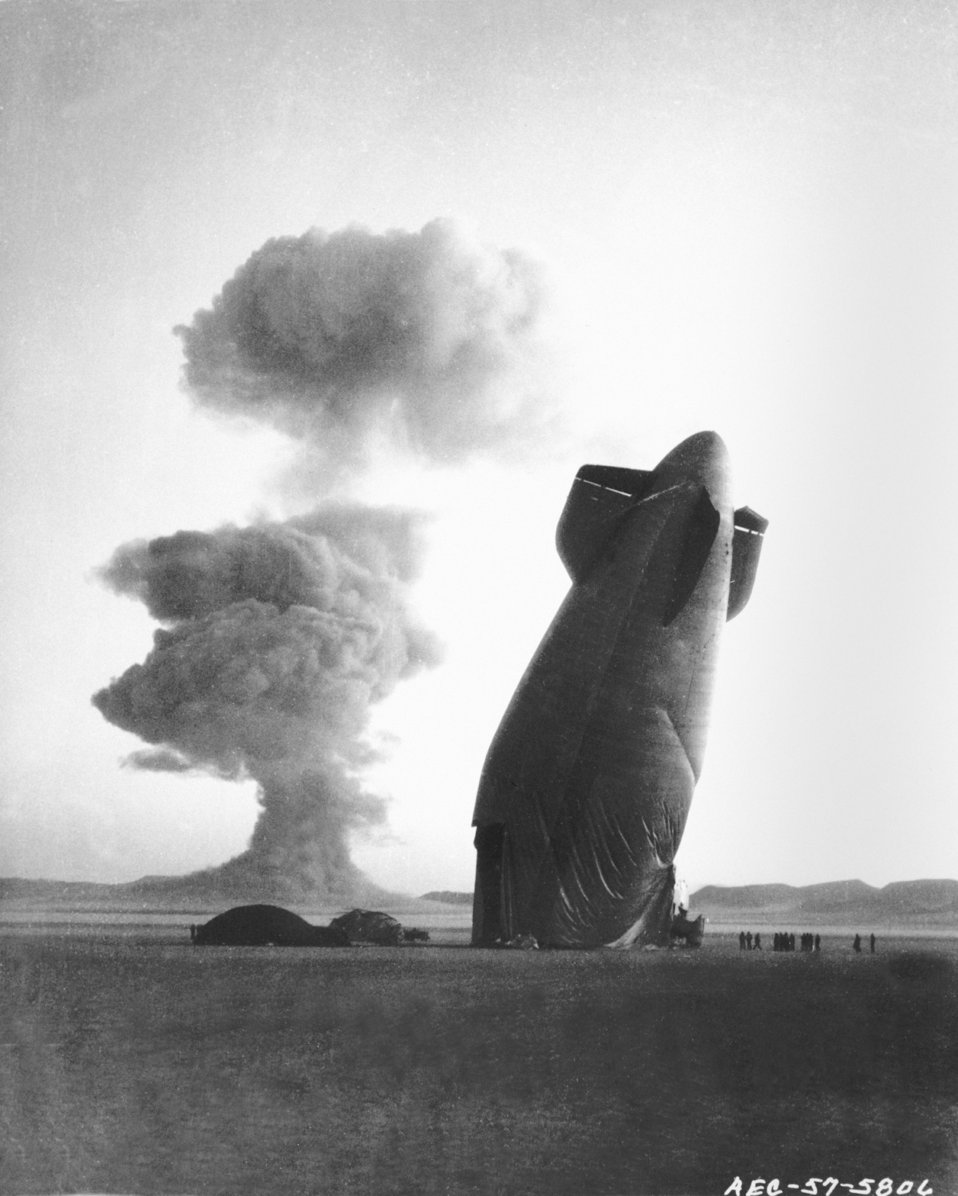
Nevada Test site

BARRAGE BALLOON AT THE STOKES TEST